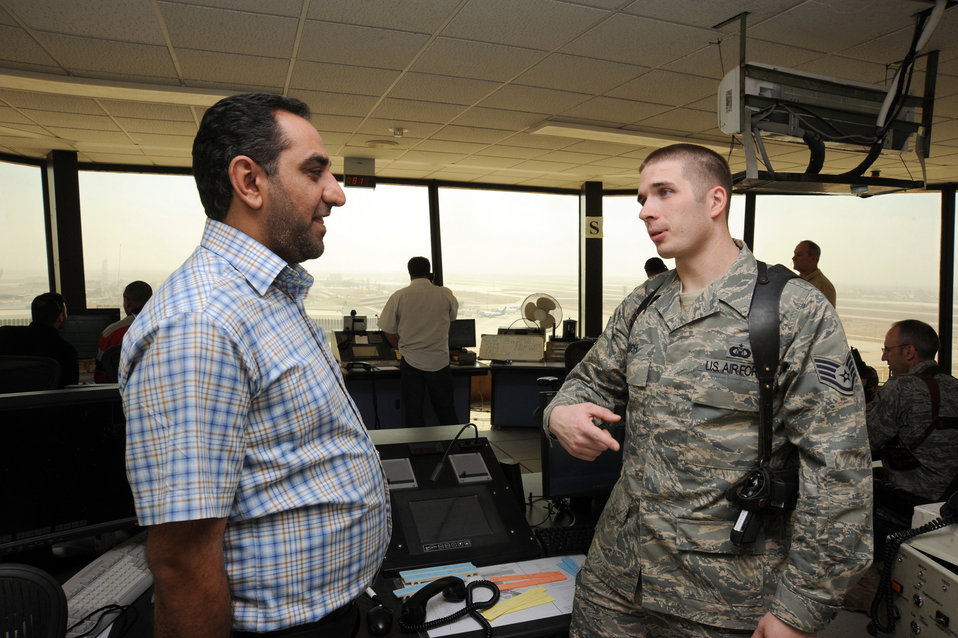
ICAA assumes full air traffic control at BIAP

Staff Sgt. Bradley Rich, 447th Expeditionary Operations Support Squadron air traffic control liaison, coordinates the arrival of a military aircraft here with an Iraqi ATC shift supervisor Oct. 14, 2009. Air traffic control operations were conducted by Iraqis and U.S. Airmen assigned to the 447 EOSS at Sather Air Base, while more Iraqis were training to become certified. Airmen were able to fully turn over air traffic control duties to the Iraqis as of Oct.1. The Airmen now focus on military flights arriving and departing from BIAP. Sergeant Rich is deployed from Tinker Air Force Base, Okla., and hails from Longview, Texas.